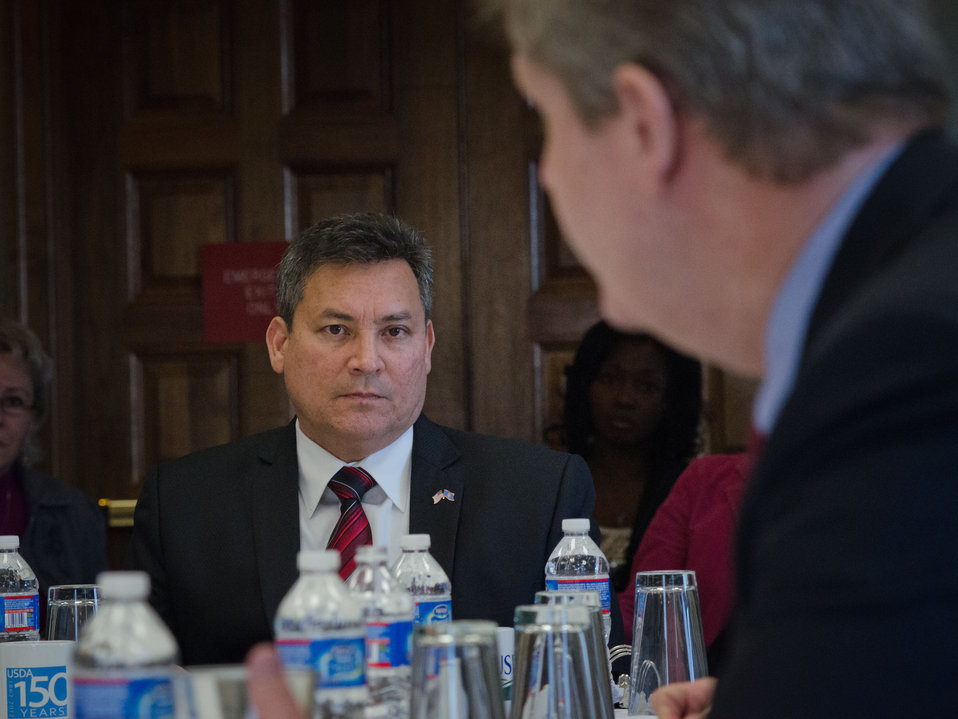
Guam Governor Eddie Calvo listens to Agriculture Secretary Tom Vilsack speak at a breakfast he hosted a breakfast for Western Governors and Federal Officials, in the Lincoln Room at the United States Department of Agriculture headquarters, in Washington, D.C. on Sunday, February 26, 2012.